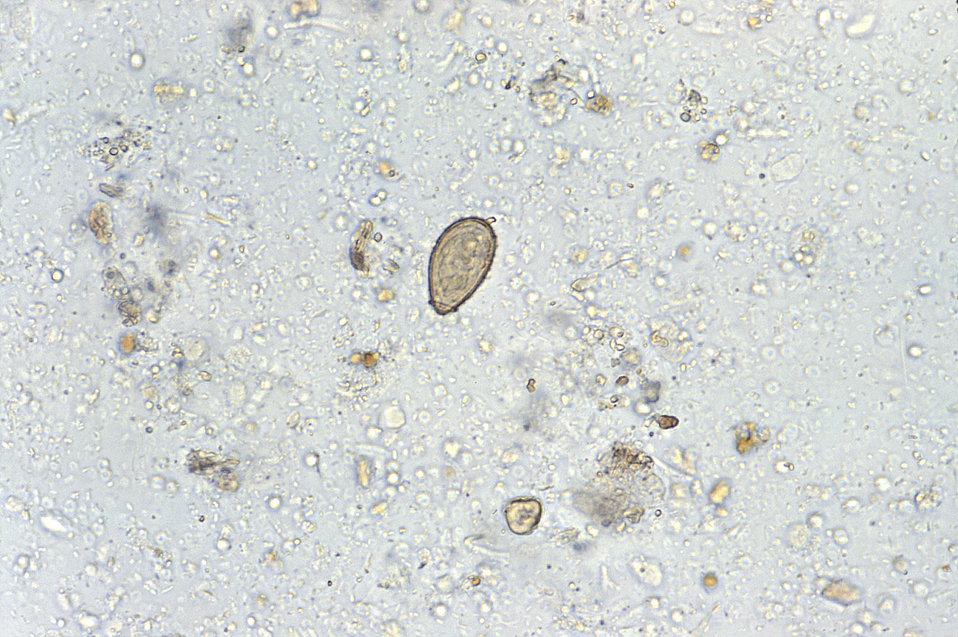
Under a high magnification of 400X, this photomicrograph revealed some of the ultrastructural features displayed by a Clonorchis sinensis egg. C. sinensis is a trematode, or fluke, and is also known as the Chinese, or oriental liver fluke.